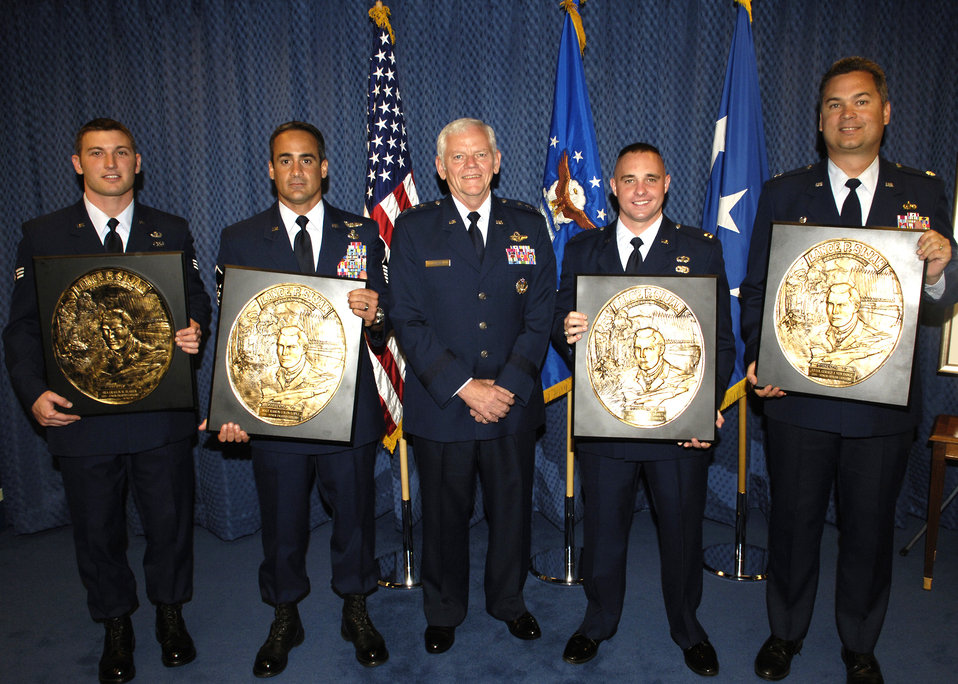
Sijan awards presented at Pentagon

Lt. Gen. Arthur J. Lichte, Air Force assistant vice chief of staff and director of staff, is shown with the recipients of the 2005 Lance P. Sijan Air Force Leadership Award at the Pentagon on Tuesday, June 13. From left are: Senior Airman Grailin Blamer, Fort Lewis, Wash.; Master Sgt. Ramon Colon-Lopez, Kirtland Air Force Base, N.M.; General Lichte; Capt. William Dains, Wright-Patterson AFB, Ohio; and Lt. Col. Gerald Ven Dange, Defense Contract Management Agency West at Redondo Beach, Calif.